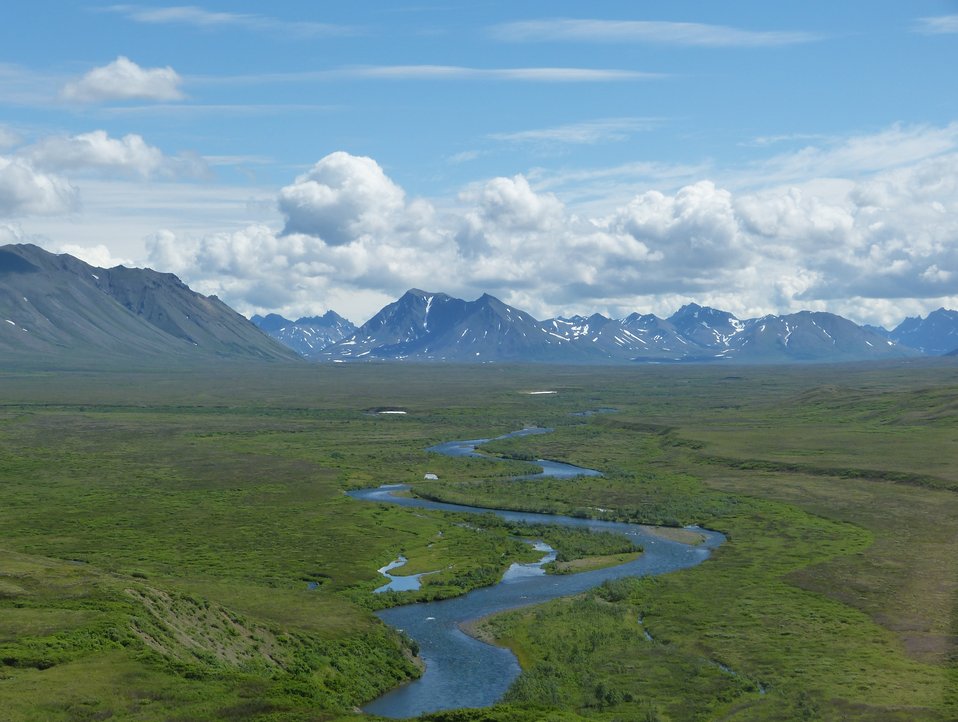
Kisaralik River, Kilbuck Mountains, Yukon Delta National Wildlife Refuge

Photo by: Kristine Sowl,
USFWS, Yukon Delta NWR, July 10, 2013